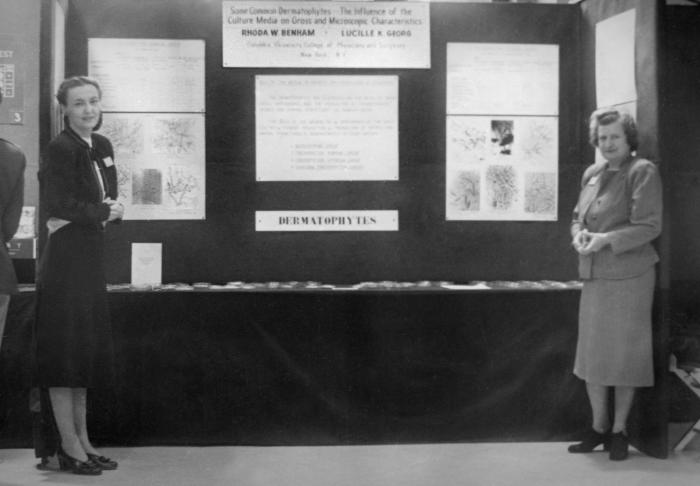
This historic image depicted Dr. Lucille K. Georg (Rt), who was the second mycologist hired by Centers for Disease Control's Dr. Ajello in 1947-48. Dr. Georg was standing with her student, Dr. Rhoda Benham of Columbia University, who herself, was a pioneer in starting medical mycology efforts in the United States. The photograph showed Dr. Georg her student, as they were presenting a poster presentation entitled, 'Some Common Dermatophytes - The Influence of the Culture Media on Gross and Microscopic Characteristics'. The display took place at the American Academy of Dermatology meeting held in Chicago in 1957. This, indeed, is a very rare photograph of both the professor and her student together. The Medical Mycological Society of the Americas has a special award named the 'Rhoda Benham Award', which is awarded by the society every year to an outstanding medical mycologist.